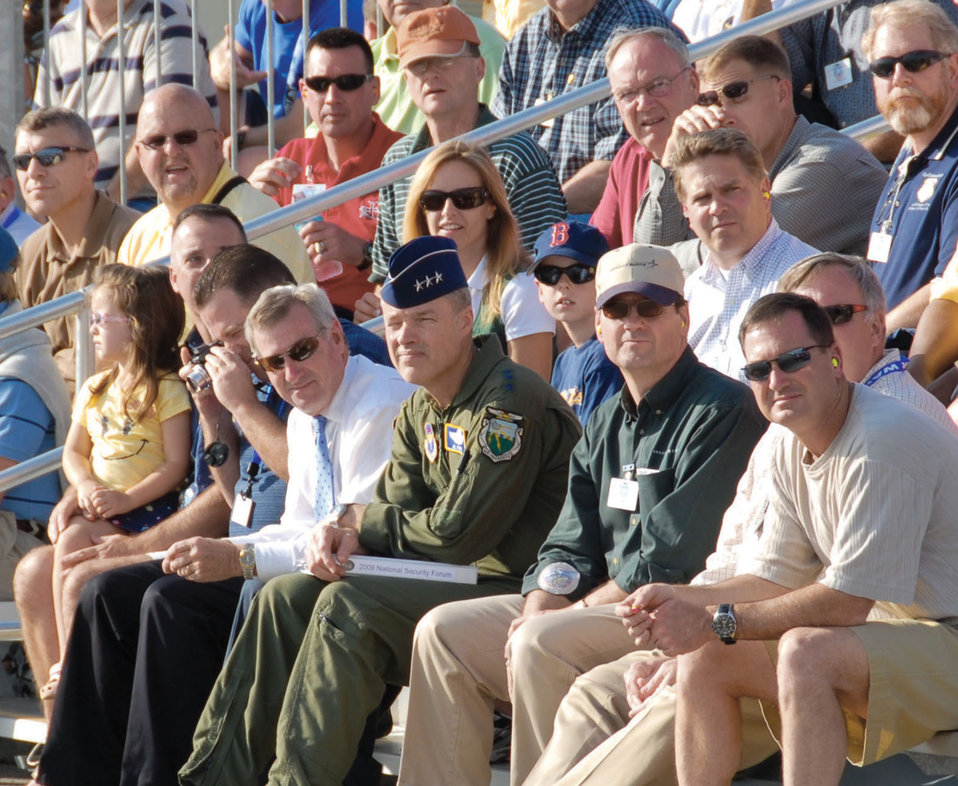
National Security Forum

Montgomery, Ala., Mayor Todd Strange (center left) and Air University commander Lt. Gen. Allen Peck (center right) watch as aircraft perform an aerial demonstration May 20 for attendees and sponsors of the National Security Forum at Maxwell Air Force Base, Ala.